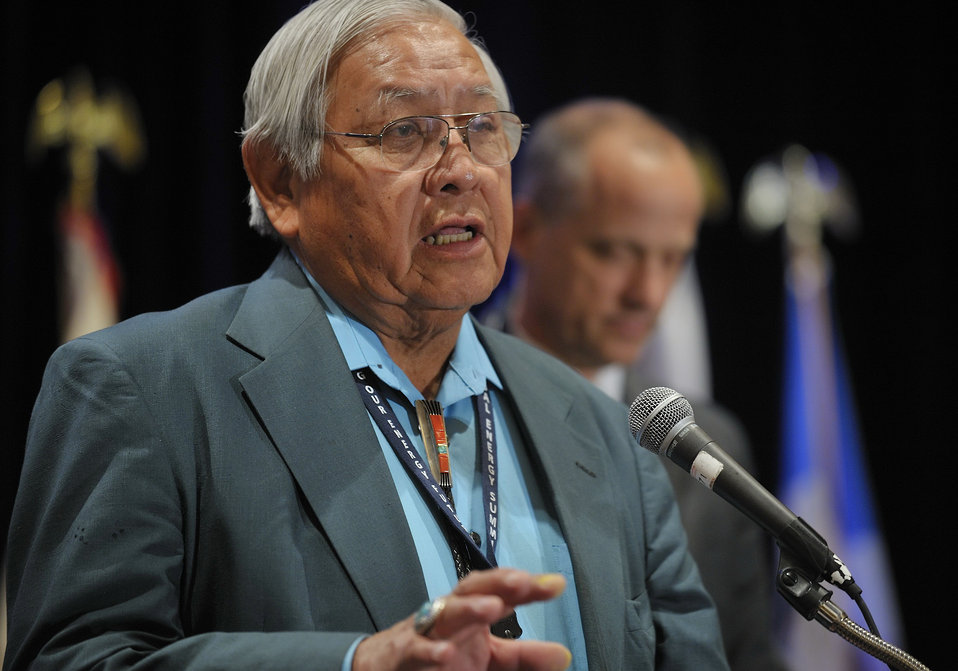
Tribal Energy Summit

Former President of the Navajo Nation, Peterson Zah offers closing prayer.